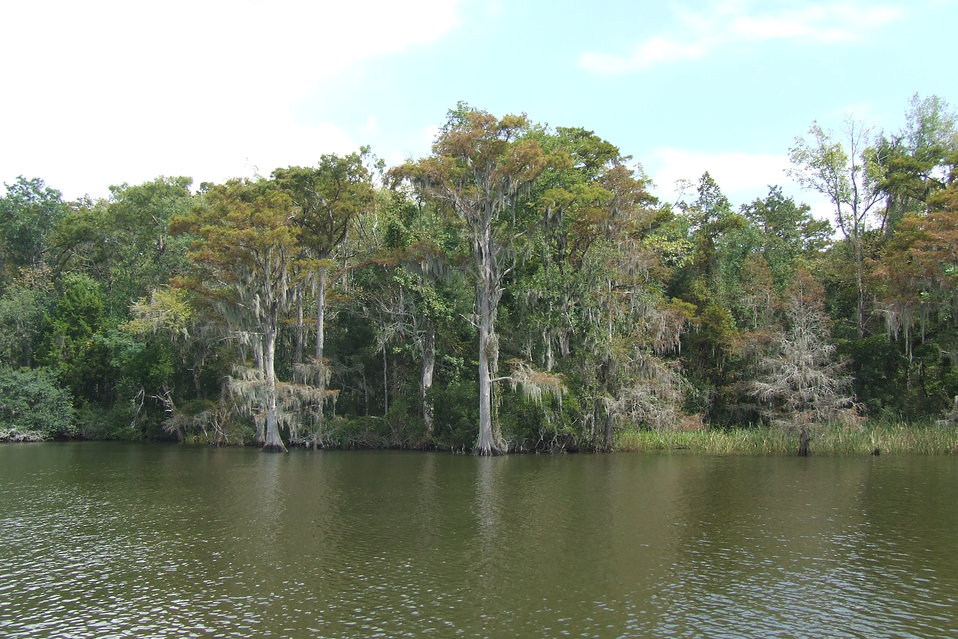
Delta landscape, Alabama